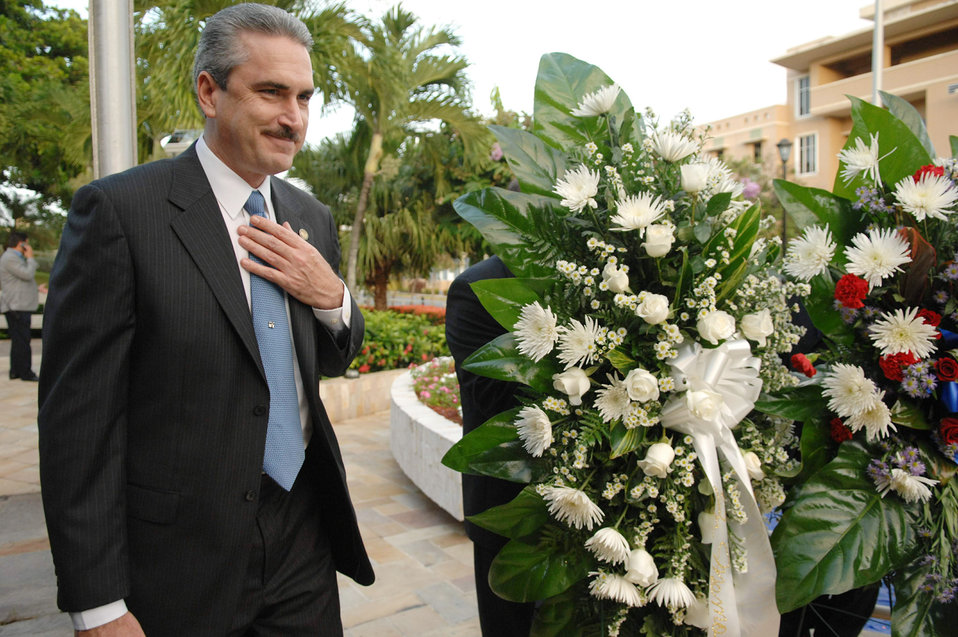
Reservists honor fallen servicemembers

Puerto Rico President of the Senate Tomas Rivera-Schatz lays a wreath at El Capitolio 's El Monumento de la Recordacion as part of the Memorial Ceremony in Old San Juan, Puerto Rico, the location of the 2009 League of United Latin American Citizens convention and exposition July 14 at San Juan, Puerto Rico. LULAC is the nation's oldest and largest Hispanic organization that has been advocating for Latinos in the United States for 80 years.